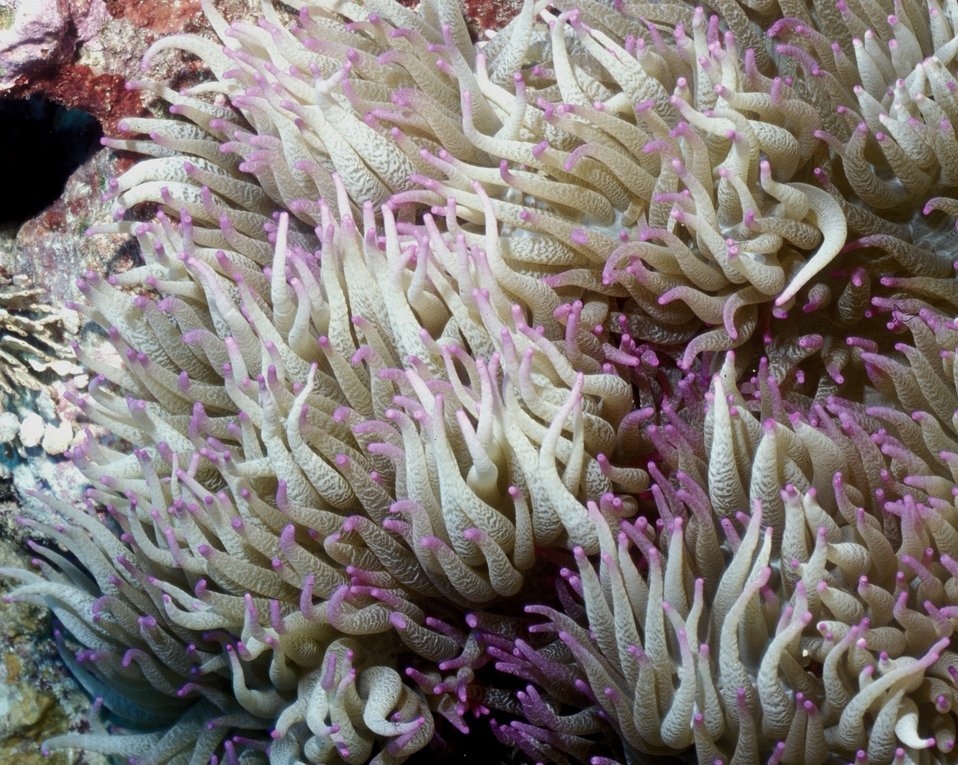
Sea anemone at Kingman Reef NWR

Heteractis Malu, a delicate sea anemone, waves its long purple-tipped tentacles at Kingman Reef National Wildlife Refuge in the Pacific, about 1,000 miles southwest of Honolulu.